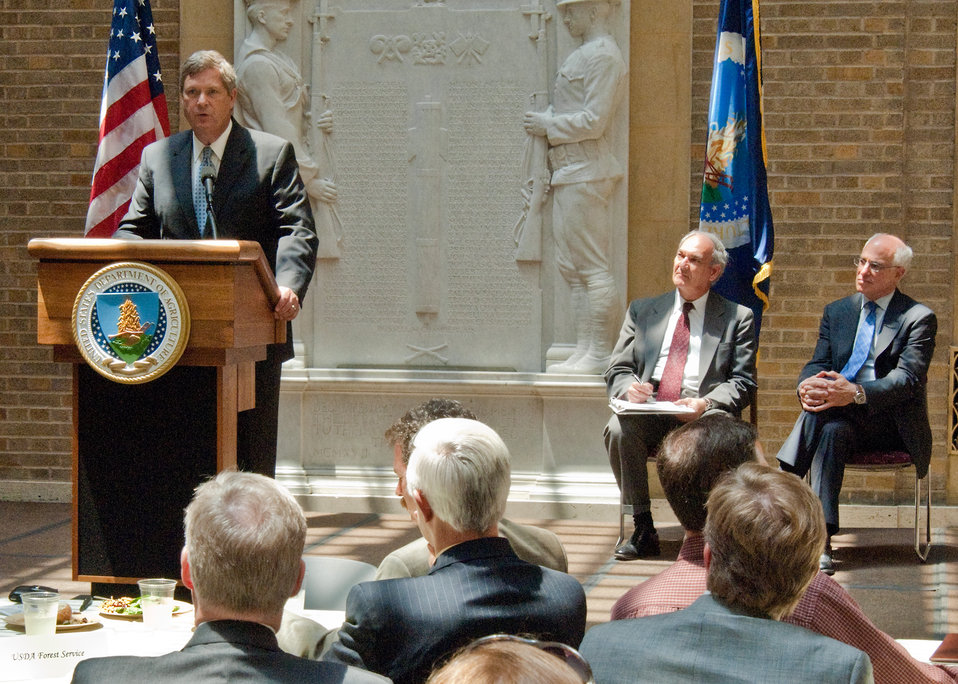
From left: Agriculture Secretary Tom Vilsack, Derrick Crandall, American Recreation Coalition and Harris Sherman, Under Secretary, Natural Resources and Environment at the United States Department of Agriculture and American Recreation Coalition presentation of the 2010 Legends awards during Great Outdoors Week. Great Outdoors Week is ARC's celebrartion of the value and importance of outdoor recreation. The award program was held on the patio of the Department of Agriculture in Washington, DC, Thursday, June 10, 2010. USDA Photo 10di1398-11.